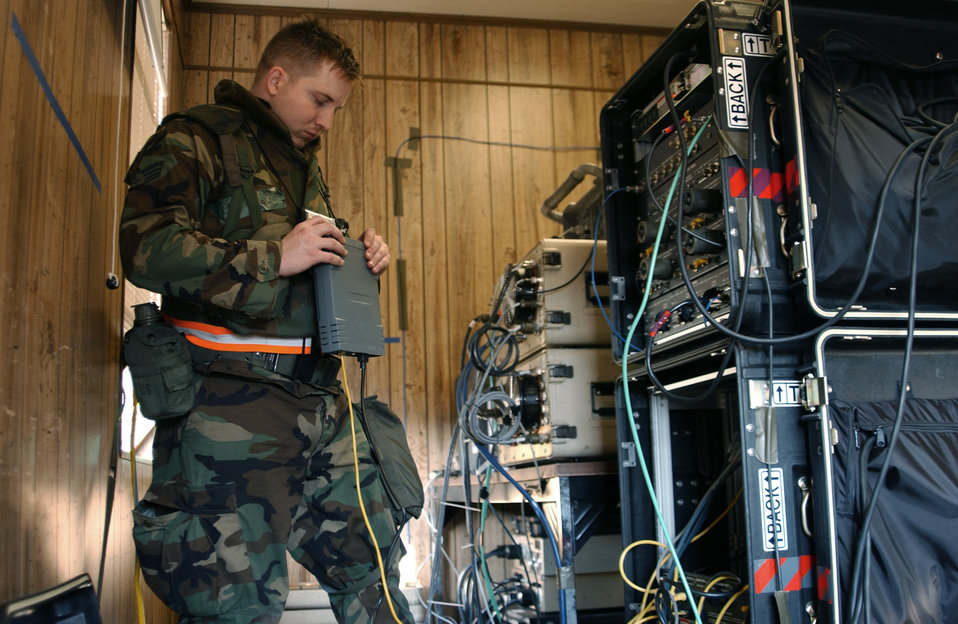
Crisis Reach

GULFPORT, Miss. -- Senior Airman Robert Ringer troubleshoots a